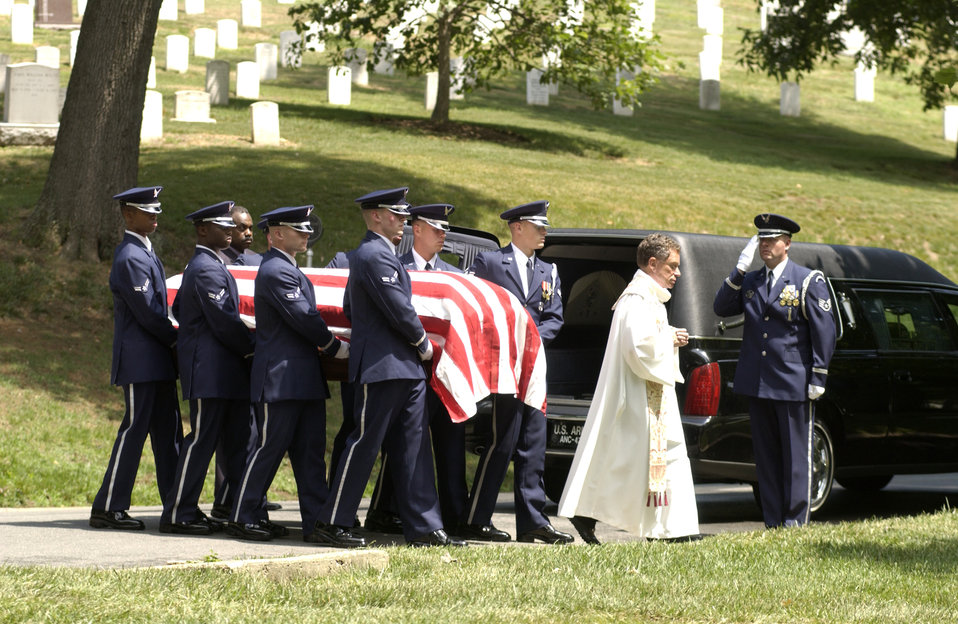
Father's Day bittersweet for one Airman's family

An Air Force Honor Guard detail and a chaplain proceed to the final resting place of Staff Sgt. Calvin Cooke Jr. at Arlington National Cemetery in Arlington, Va., on Tuesday, June 20. Sergeant Cooke, a C-130 Hercules loadmaster, died in April 1972 when his aircraft crashed in South Vietnam after being hit by ground fire. His remains were identified last month by experts at the Joint Prisoner of War/Missing in Action Accounting Command headquarters.